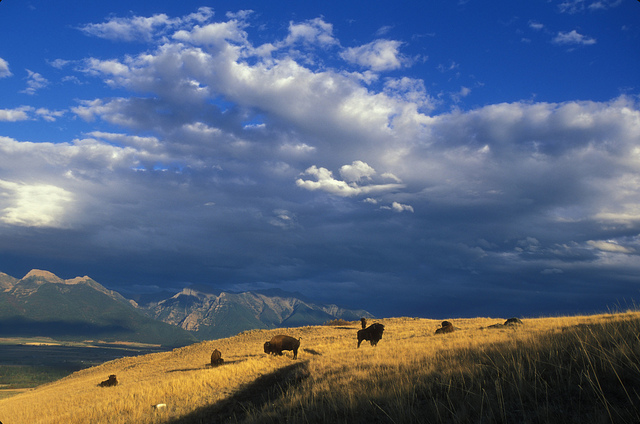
National Bison Range Ryan Hagerty USFWS

The National Bison Range in Montana was created in 1908, when bison were in such peril that the founding herd of animals had to be shipped in from an East Coast zoo. The refuge has played a crucial role in saving this iconic American species.